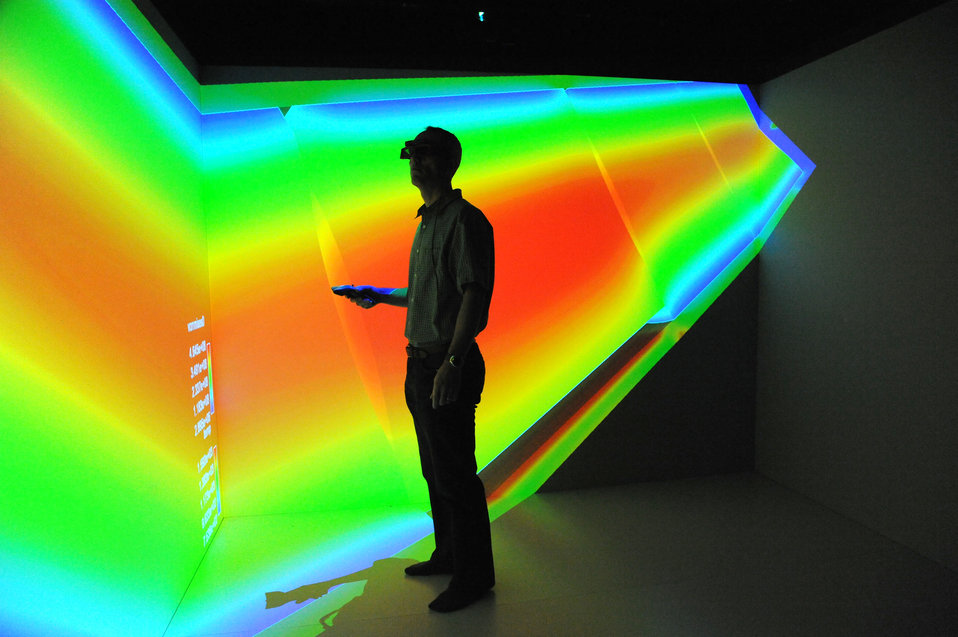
BISON, an application that runs on Idaho National Laboratory's Multiphysics Object Oriented Simulation Environment (MOOSE) simulation platform models nuclear fuel rod behavior inside working nuclear reactors.